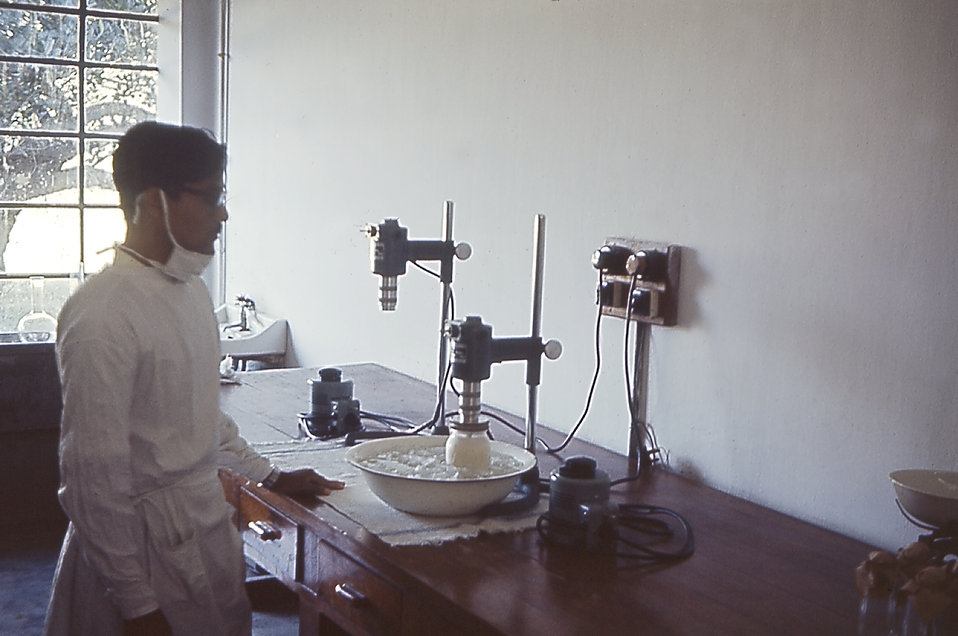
In 1964, during the pulp-grinding process, this West Pakistan vaccine laboratory was making smallpox vaccine.